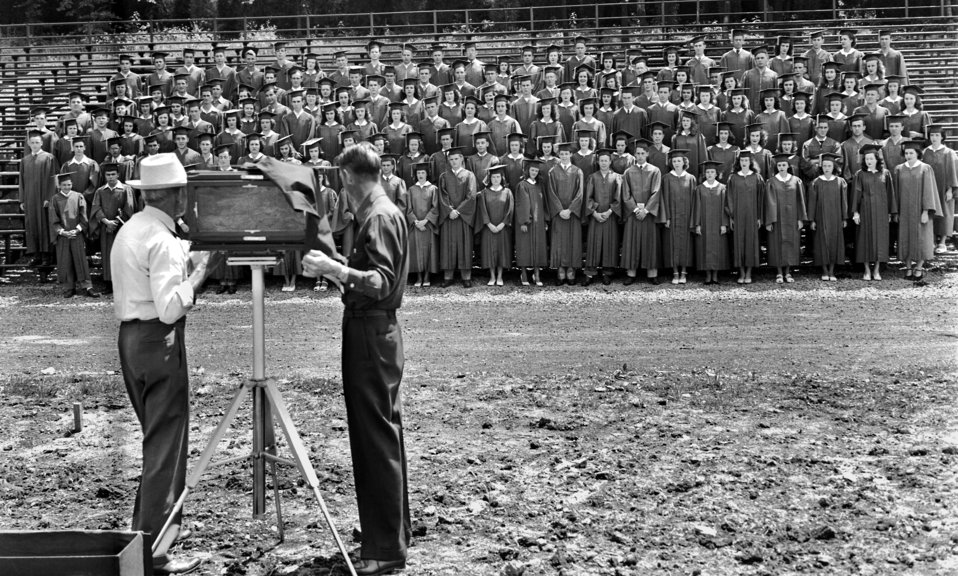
Oak Ridge High School Graduation Class of 1948

5016 DOE photo by L.P. Stokes Oak Ridge Tennessee 6-2-1948